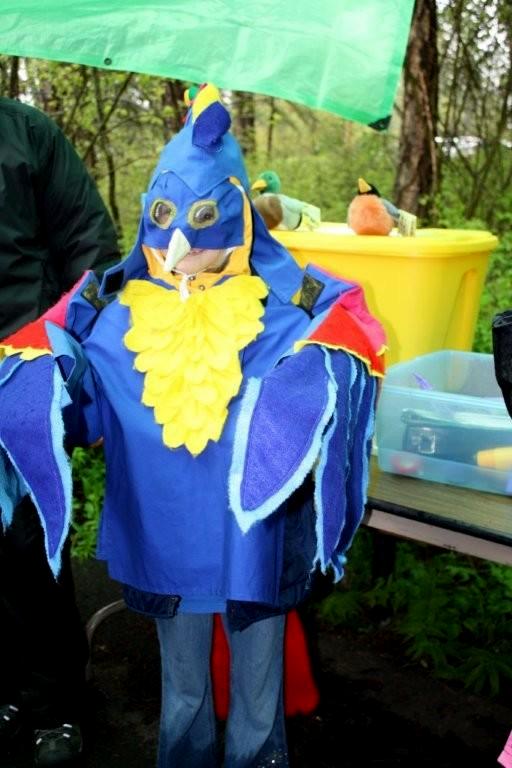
Creston National Fish Hatchery's Annual Fish Fun Fair with Flathead Audubon's Particapation

The Creston National Fish Hatchery, in association with the Flathead Community of Resource Educators (Flathead C.O.R.E.), holds an annual Fish Fun Fair to promote National Fishing and Boating Week.

Creston National Fish Hatchery invites 3rd graders from local schools to visit the hatchery and participate in learning stations, which may include fish anatomy, fish identification, fishing equipment and casting, hatchery tours, and other interesting exhibits with an aquatic focus.